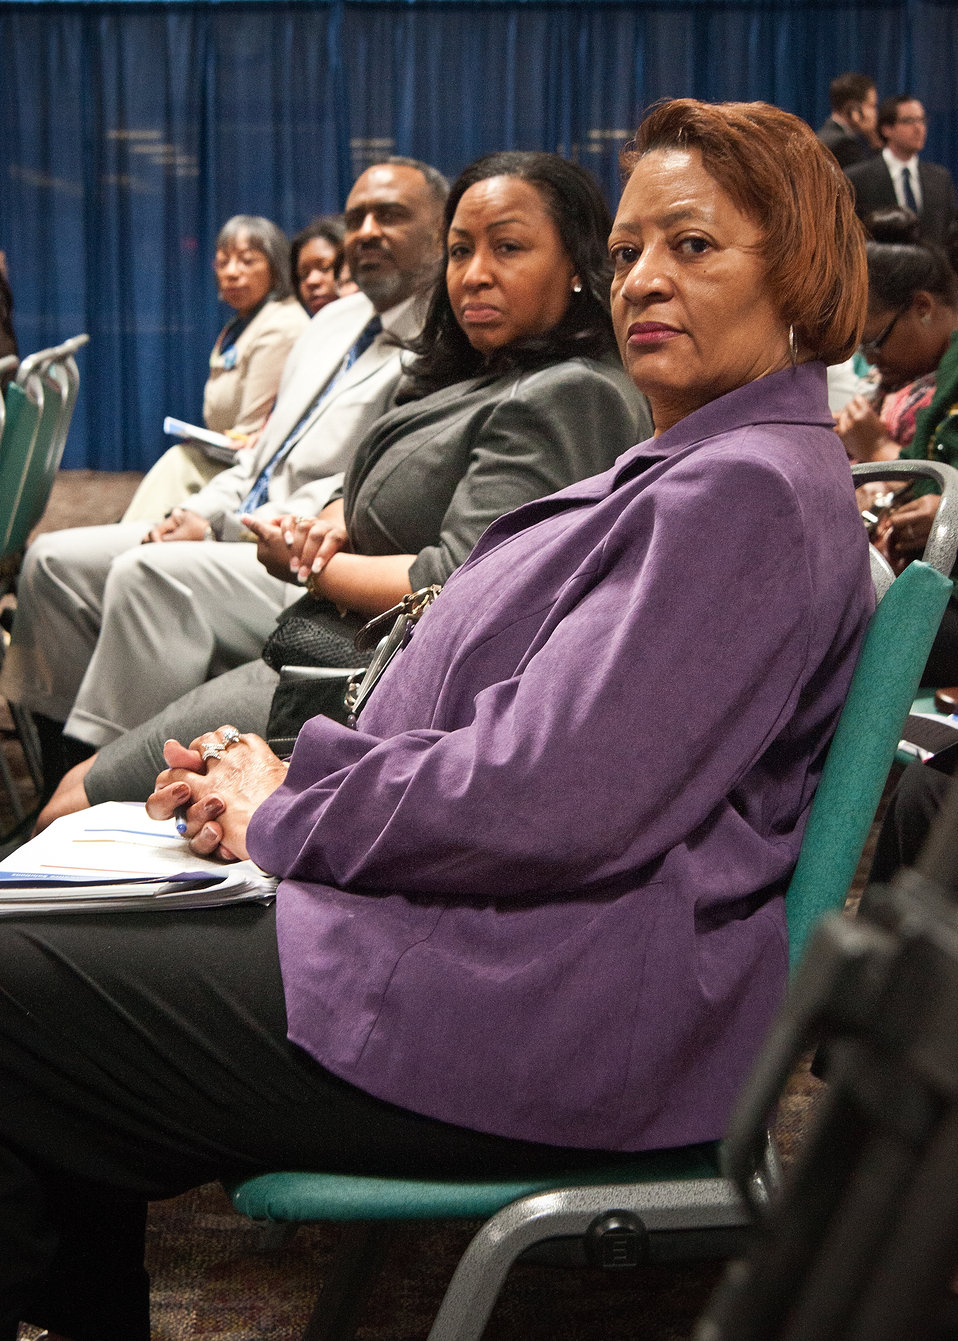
Agriculture Secretary Tom Vilsack offered U.S. Department of Agriculture (USDA) employees the opportunity to ask questions about the Blueprint for Stronger Service Initiative and hear directly from the Secretary Vilsack during the Ask The Secretary event held in the South Building Cafeteria, in Washington, D.C., on Wednesday, March 21, 2012, The Blueprint for Stronger Service Initiative aims to build a modern and efficient service organization that is closely timed with technological innovations - and better suited to respond to 21st century agricultural challenges.